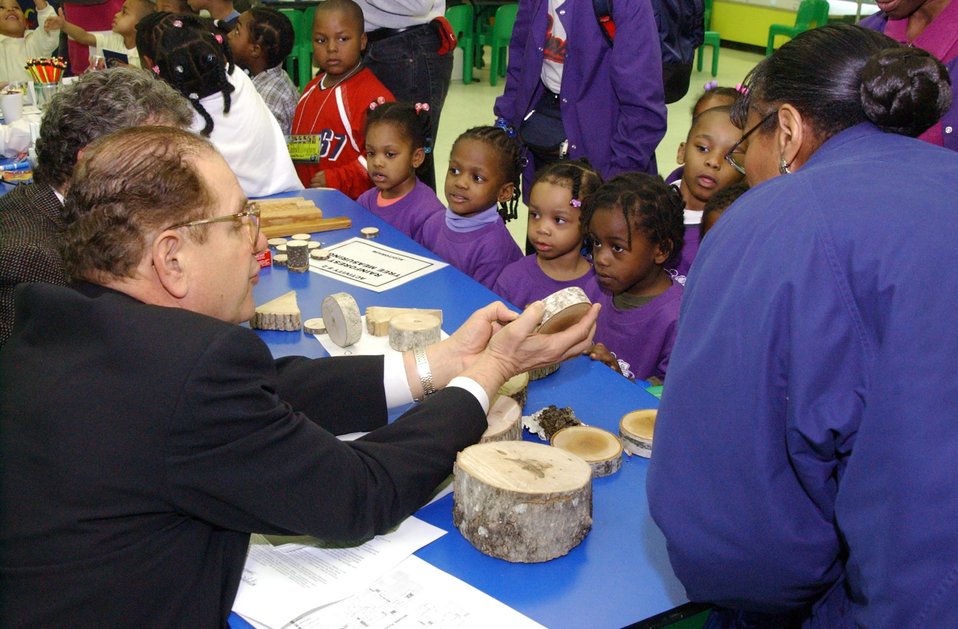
WASHINGTON DC ELEMENTARY SCHOOL STUDENTS WATCH AS DR. RAYMOND ORBACH, DOE DIRECTOR, OFFICE OF SCIENCE MEASURES THE RINGS OF TREES.

DR. ORBACH PARTICIPATED IN THE SCIENCE SAFARI WHICH TOOK PLACE AT THE CAPITAL CHILDREN'S MUSEUM ON MARCH 20, 2003. SEVERAL ELEMENTARY SCHOOLS FROM WASHINGTON D.C. ATTENDED AS PART OF THE EXCELLENCE IN SCIENCE, TECHNOLOGY AND MATHEMATICS EDUCATION WEEK. DOE'S OFFICE OF WORKFORCE DEVELOPMENT FOR TEACHERS AND STUDENTS ORGANIZED THE SCIENCE SAFARI AS A PUBLIC/PRIVATE/NONPROFIT EFFORT.